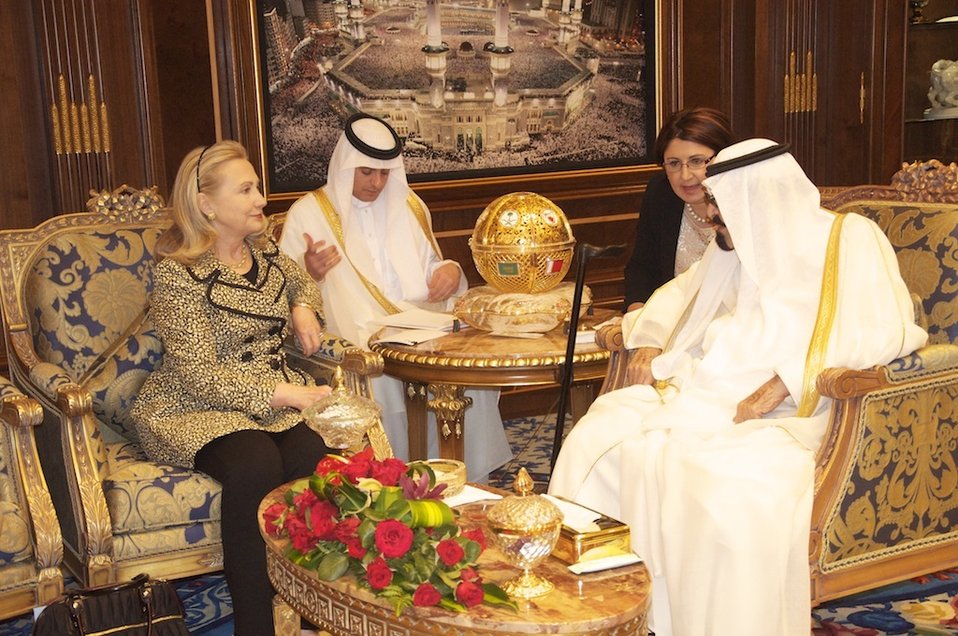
Secretary Clinton Meets With King Abdullah

U.S. Secretary of State Hillary Rodham Clinton meets with the Custodian of the Two Holy Mosques, King Abdullah of Saudi Arabia, in Riyadh on March 30, 2012.